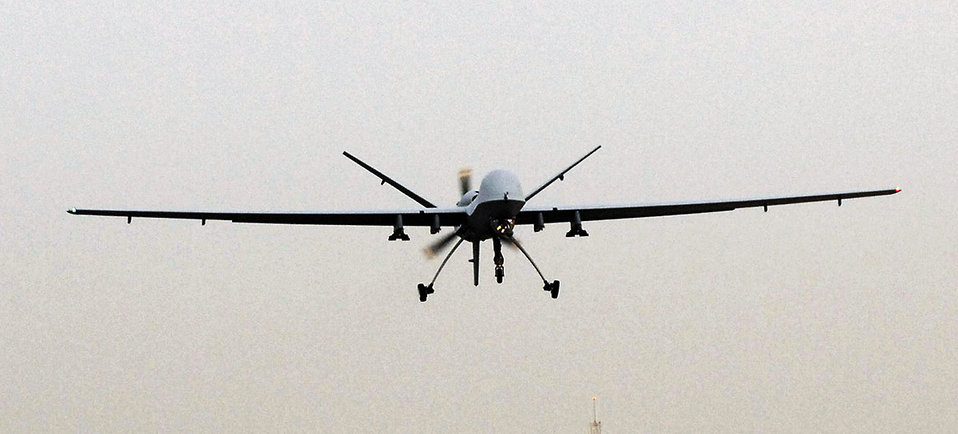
Aug. 6 airpower summary: Reaper bombs insurgents

An MQ-9 Reaper remotely piloted aircraft takes off from Joint Base Balad, Iraq. The Reaper carries up to 3,750 pounds of laser-guided munitions, giving ground commanders unprecedented situational awareness and the ability to bring the right amount of force to bear on a target.